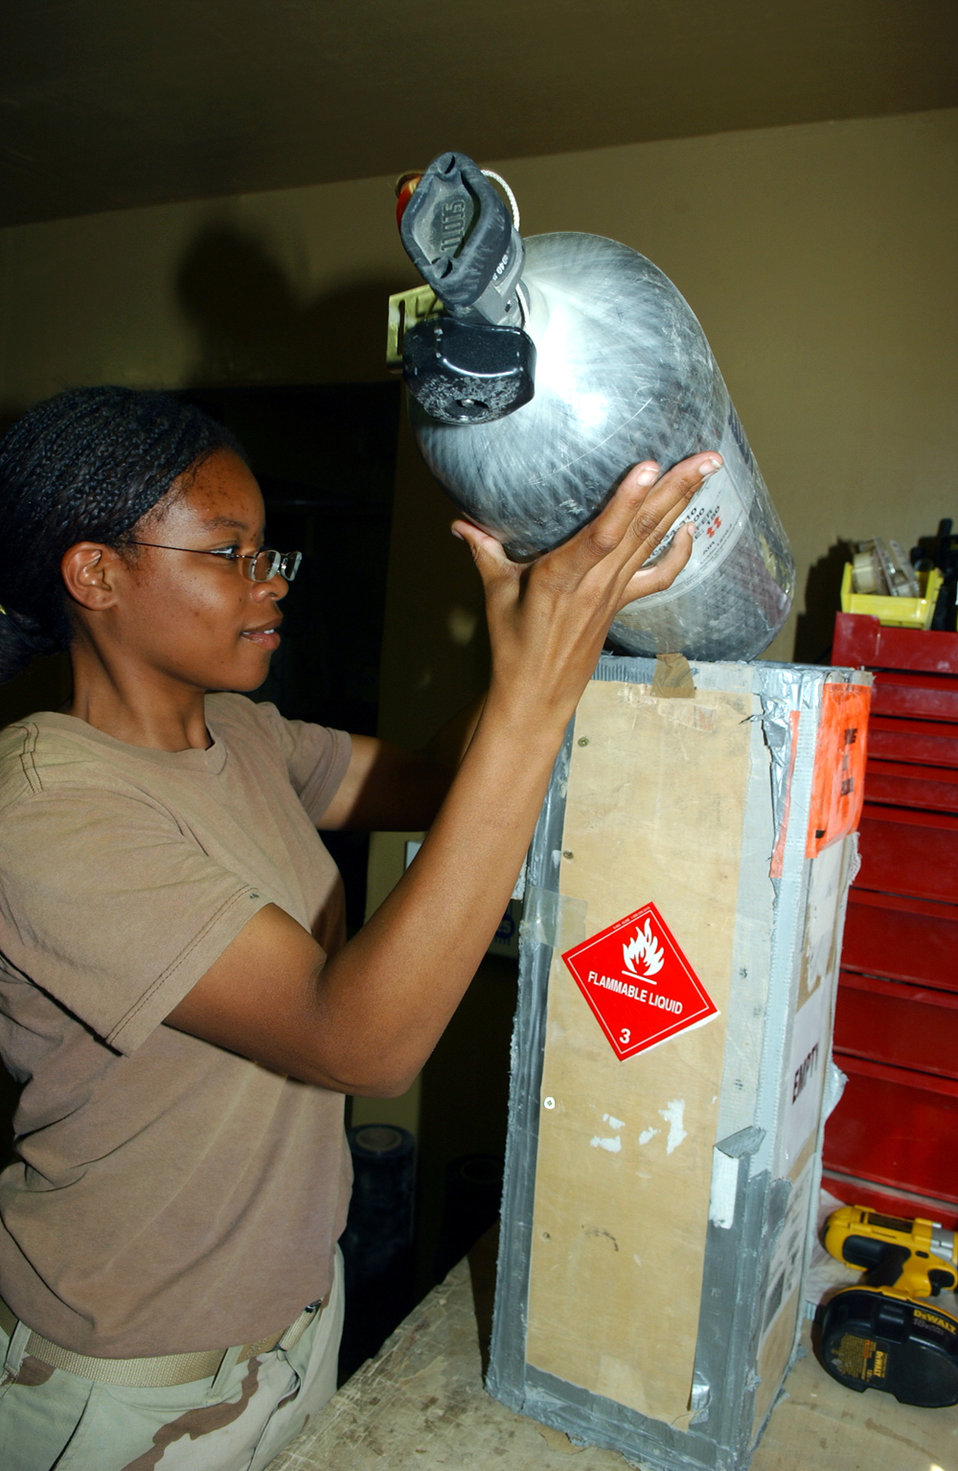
TMO packs it, tracks it

BAGRAM AIR BASE, Afghanistan -- Airman 1st Class Ieisha Smith packs a compressed air sample for shipping. Airman Smith is assigned to the 455th Expeditionary Logistics Readiness Squadron here and is from Mountain Home Air Force Base, Idaho.